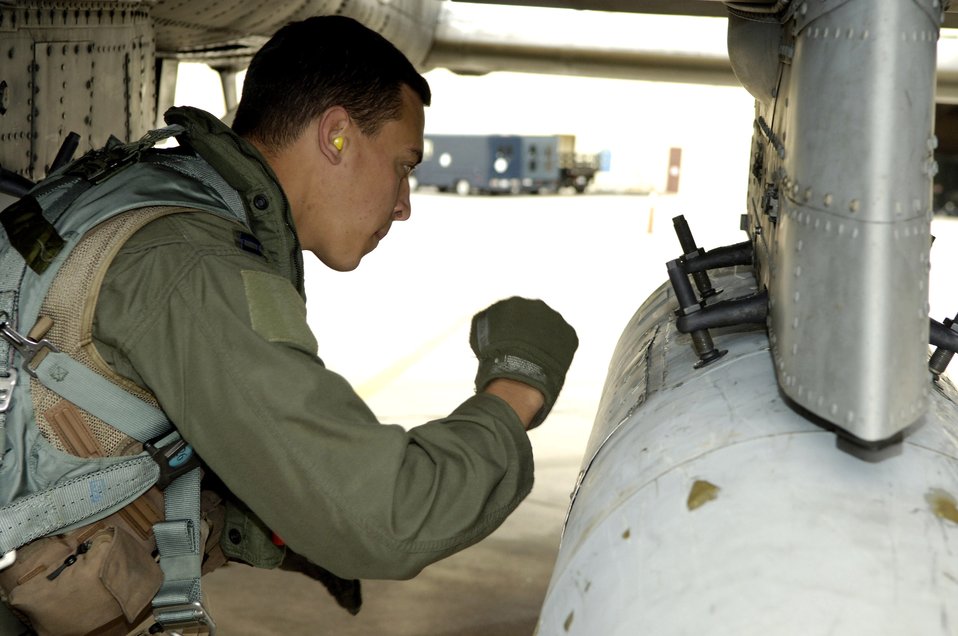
Taking an A-10 from pre-flight to flight

Capt. Andrew Tenenbaum performs a pre-flight inspection on his A-10 Thunderbolt II Oct. 29 prior to a mission. Captain Tenenbaum is a pilot in the 354th Fighter Squadron at Davis-Monthan Air Force Base, Ariz.